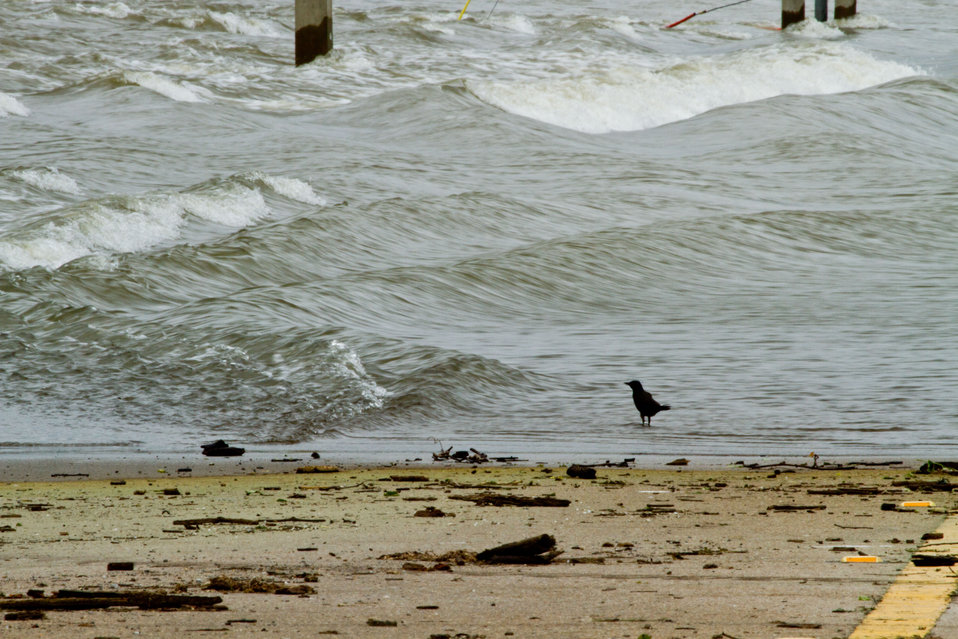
Floods waters from Mississippi River inundated casinos and farms that surround Tunica, MS, on Sunday, May 15. 2011.